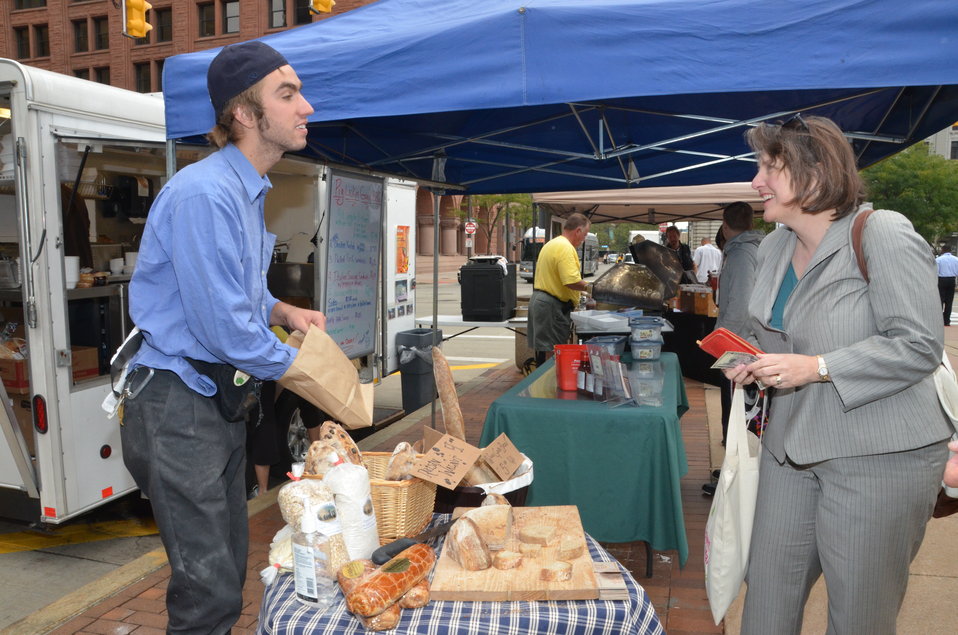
Agriculture Deputy Secretary Kathleen Merrigan visits with a vendor at Cleveland, Ohio's Downtown Farmers' Market at Public Square on Sept. 21, 2012.